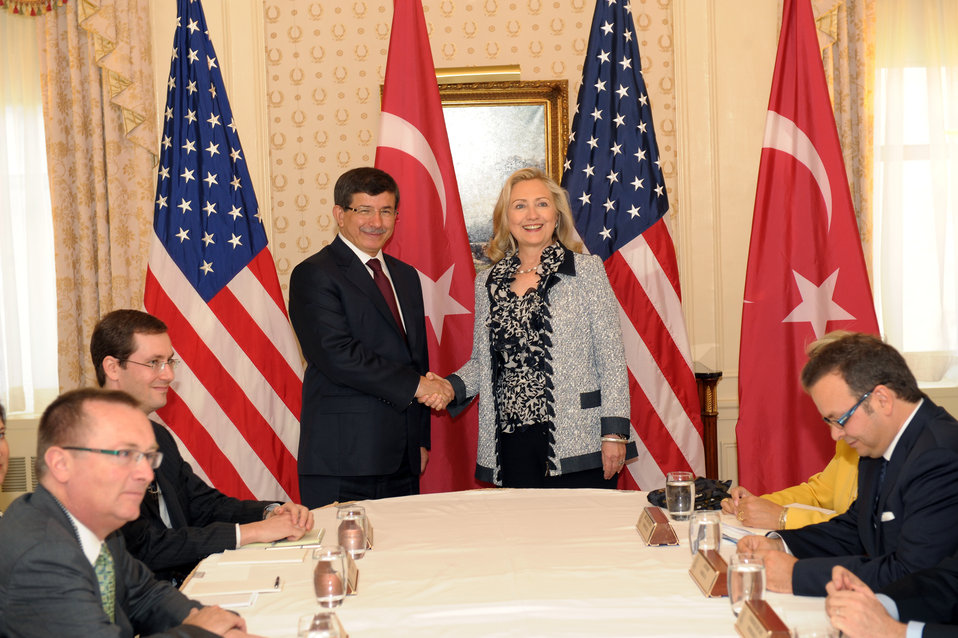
Secretary Clinton Meets With Turkish Foreign Minister Davutoglu

U.S. Secretary of State Hillary Rodham Clinton holds a bilateral meeting with Turkish Foreign Minister Davutoglu, at the Waldorf-Astoria in New York, New York, on September 19, 2011.